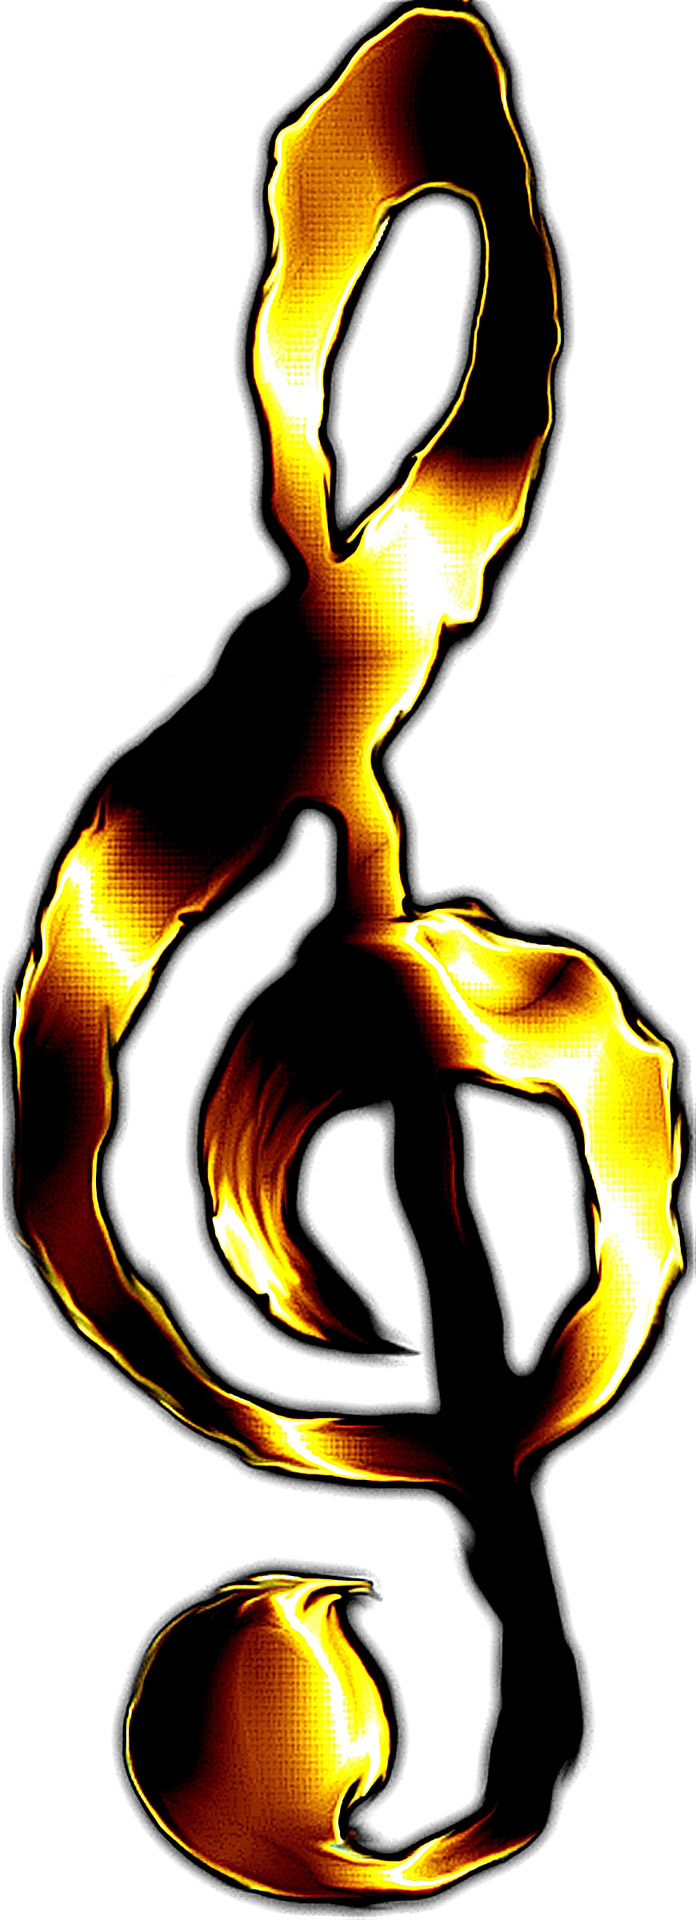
Music key

Background.